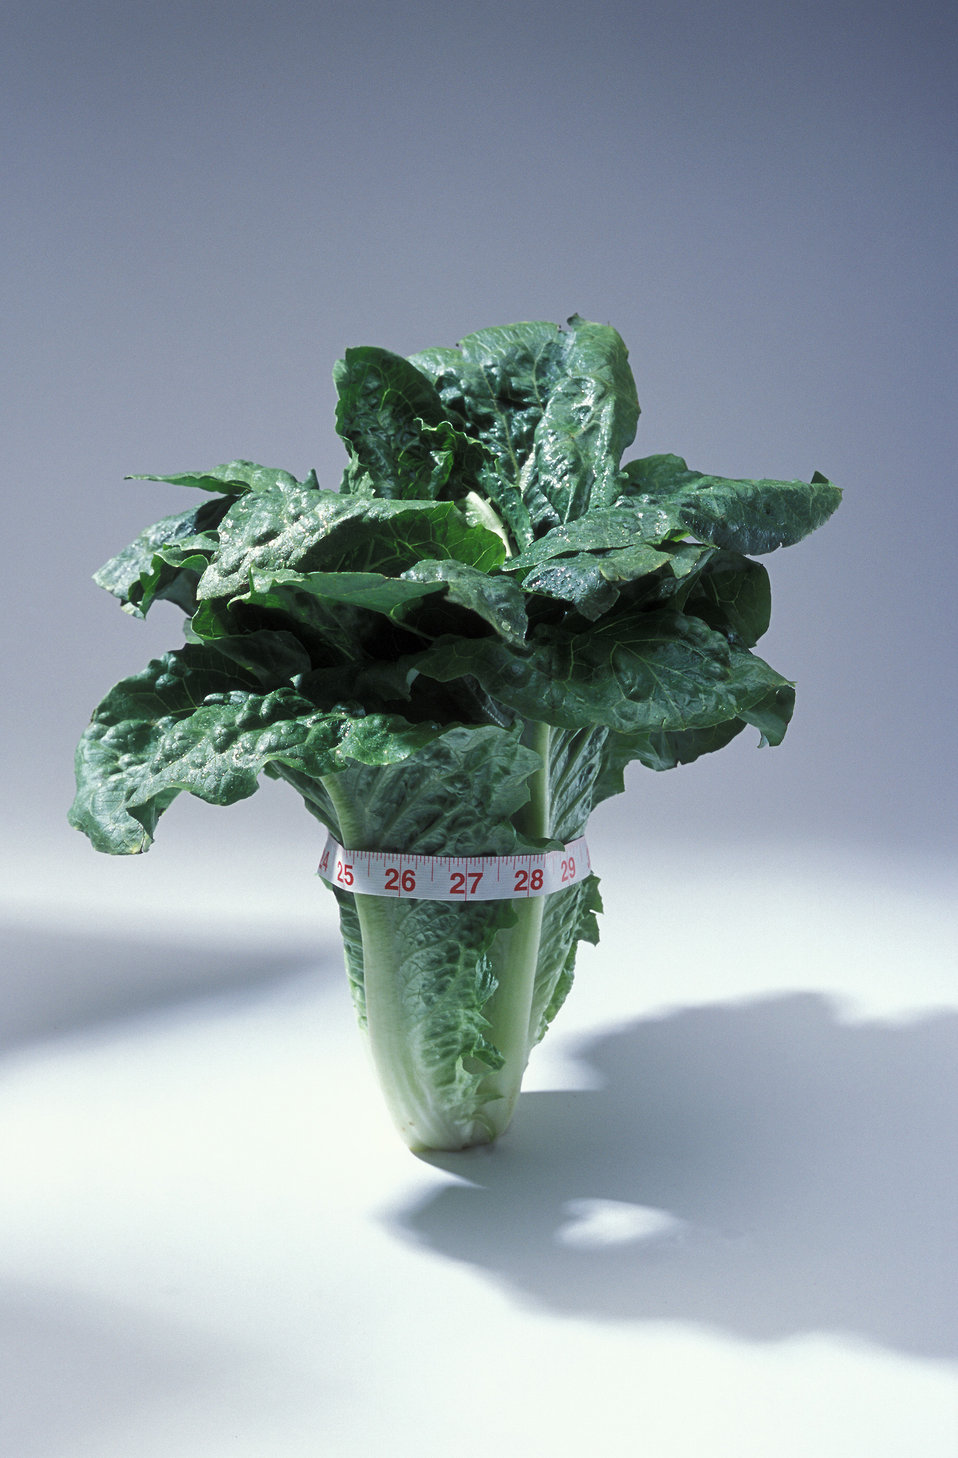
A new study shows that eating a diet high in fruits, vegetables, reduced-fat dairy products, and whole grains is associated with smaller gains both in Body Mass Index (BMI) and waist circumference.